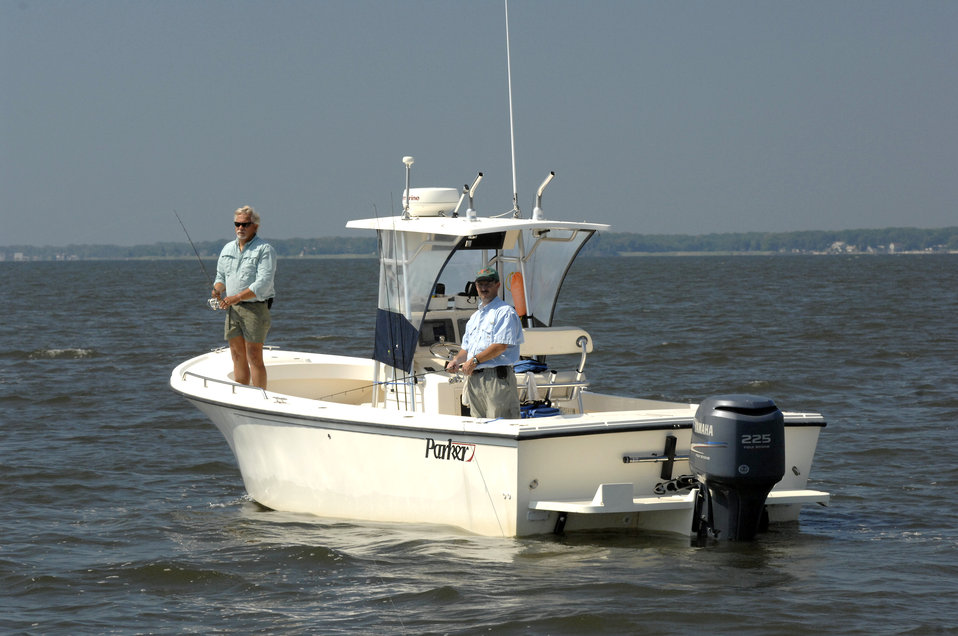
Local residents and visitors enjoy fishing in the Chesapeake Bay, Maryland on July 14, 2008.